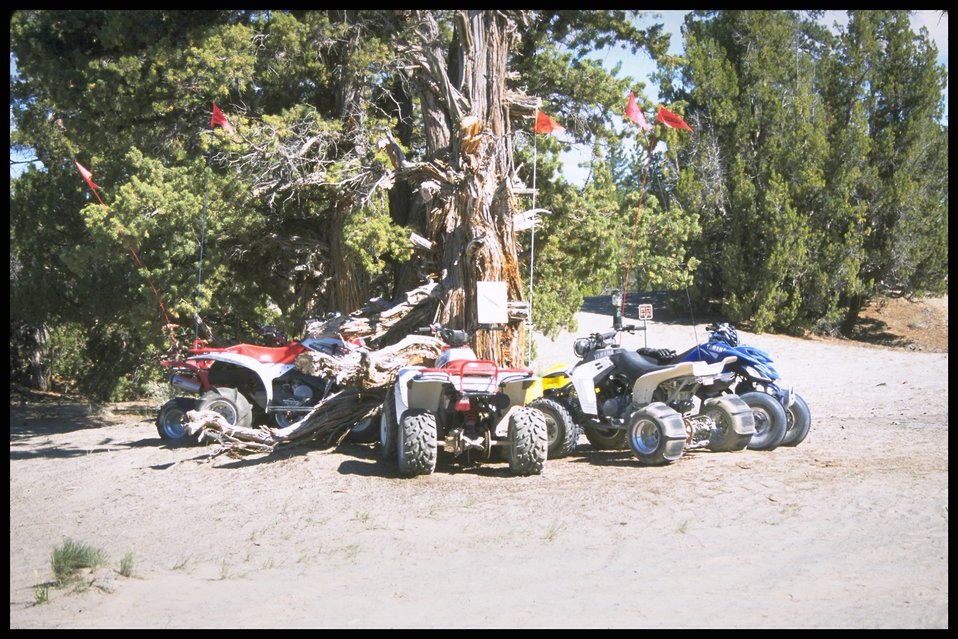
Tourist camp, Lakeview District.